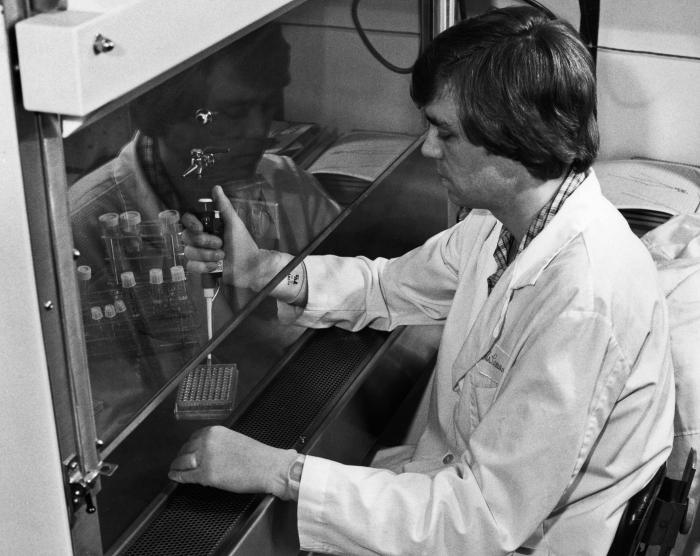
Centers for Disease Control microbiologist David Cross was shown here in this 1983 photograph, conducting lymphocytic transformation tests (LTT) on lymphocytes acquired from AIDS patients. At this stage of the process, he was pipetting specimens into a microtiter plate.